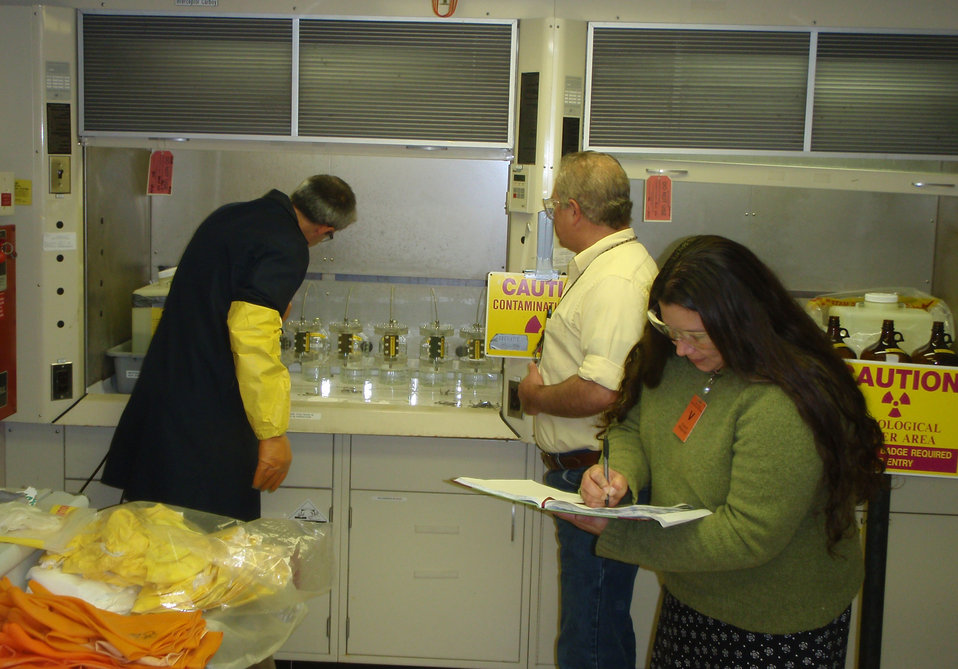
Recovery Act Funds Construction of Trench to Mitigate Groundwater Contamination

Shannon Seneca, right, a State University of New York at Buffalo doctoral candidate, reviews a log book in the WVDP onsite laboratory.

With the infusion of $6.5 million in Recovery Act funds, West Valley Demonstration Project (WVDP) is installing an 850-foot-long trench this fall (2010) that will prevent the spread of a contaminated groundwater plume.

WVDP worked with the State University of New York at Buffalo to develop the trench, known as a permeable treatment wall. The trench will contain zeolite, a naturally-occurring mineral formed from volcanic ash. The zeolite attracts the contaminant, Strontium-90, and pulls it out of the groundwater, similar to a home water softener system.